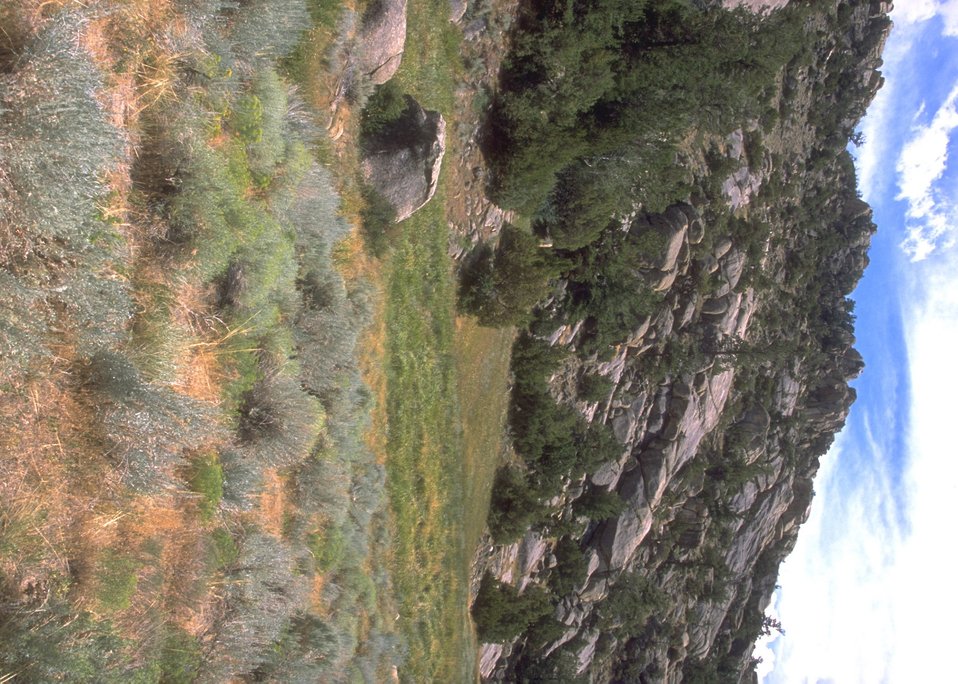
Martin's Cove area, Rawlins Field Office